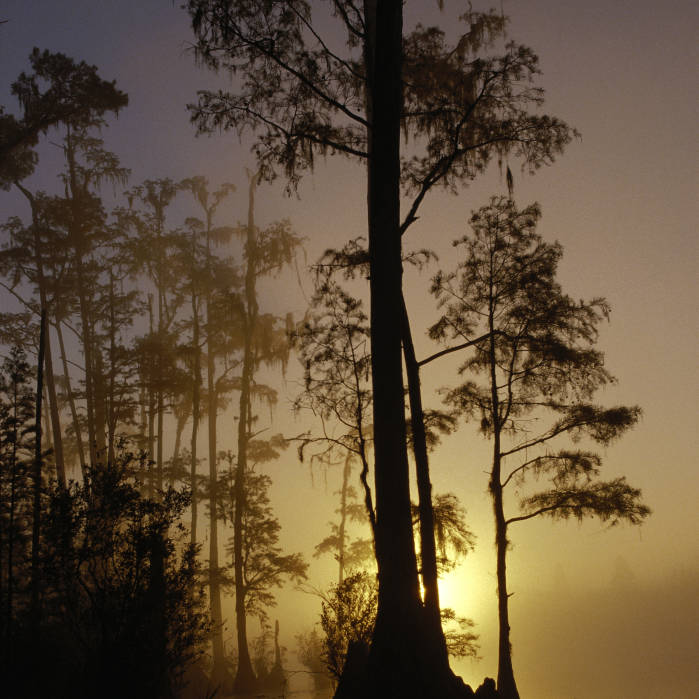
Okefenokee National Wildlife Refuge, GA

Bald cypress trees